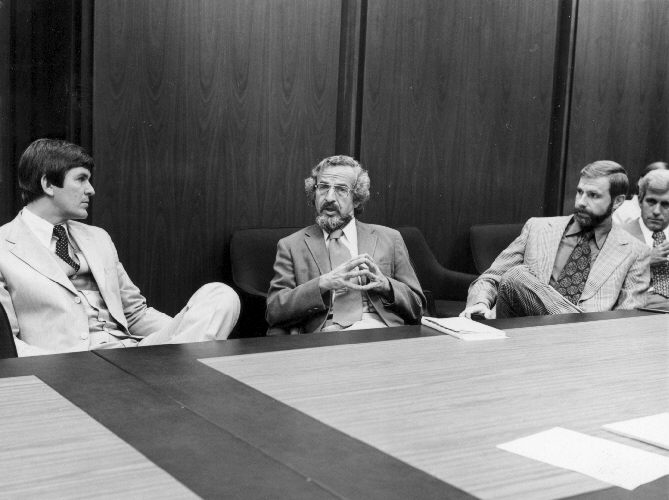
DHEW Secretary F. David Mathews (far left), during his 1975 visit to CDC, meeting with (L-R) Dr. Philip S. Brachman, Dr. William H. Foege, and Mr. Jim Bloom.